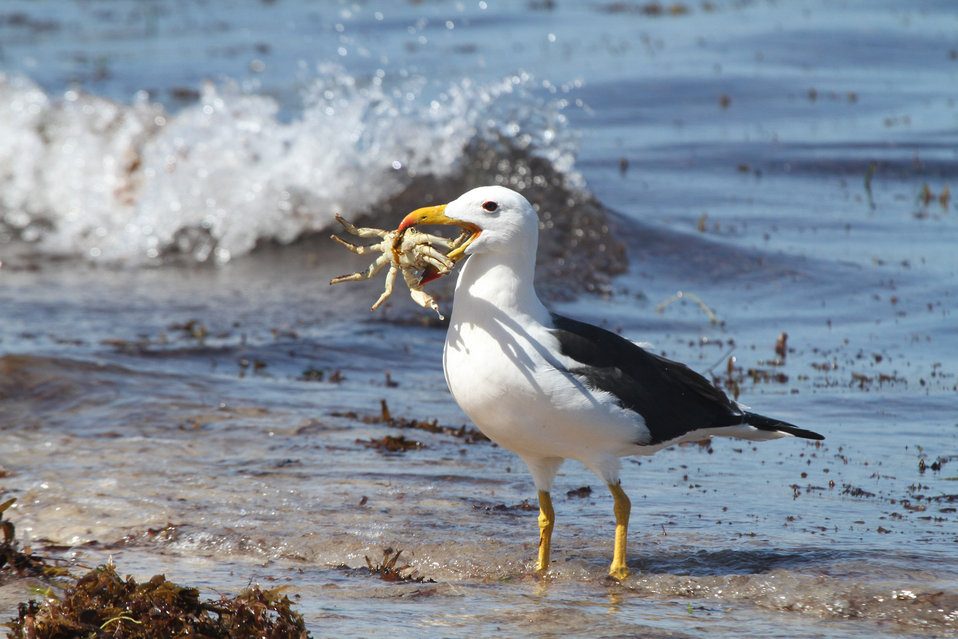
Dinner

Albatross eating lunch.